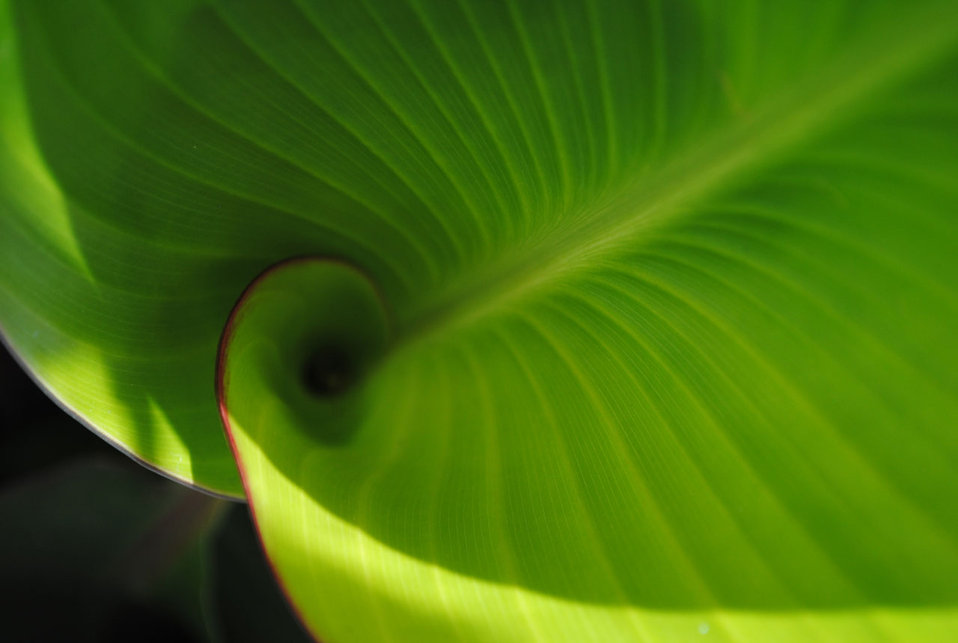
Green leaf

A green leaf close up.